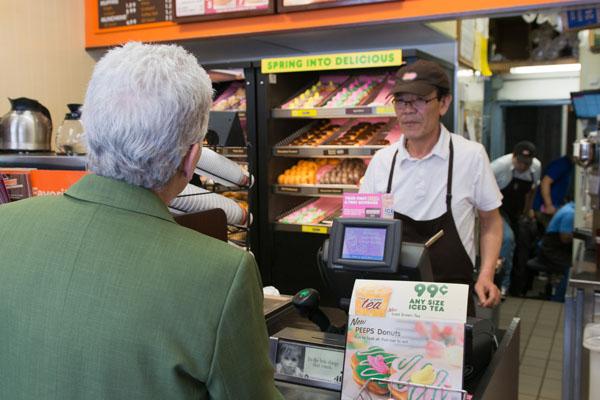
Day in the Life - Earth Day, April 22, 2014

Hoping to celebrate Earth Day and highlight the importance of environmental stewardship, EPA Administrator Gina McCarthy spent the day in Boston talking about the importance of climate change with young adults, engaging with businesses leaders, and even fulfilling a lifelong dream of throwing out the first pitch at Fenway Park.

1:30 am – EPA Administrator Gina McCarthy starts her Earth Day in Boston with a cup of her favorite coffee, always black. (1/12)